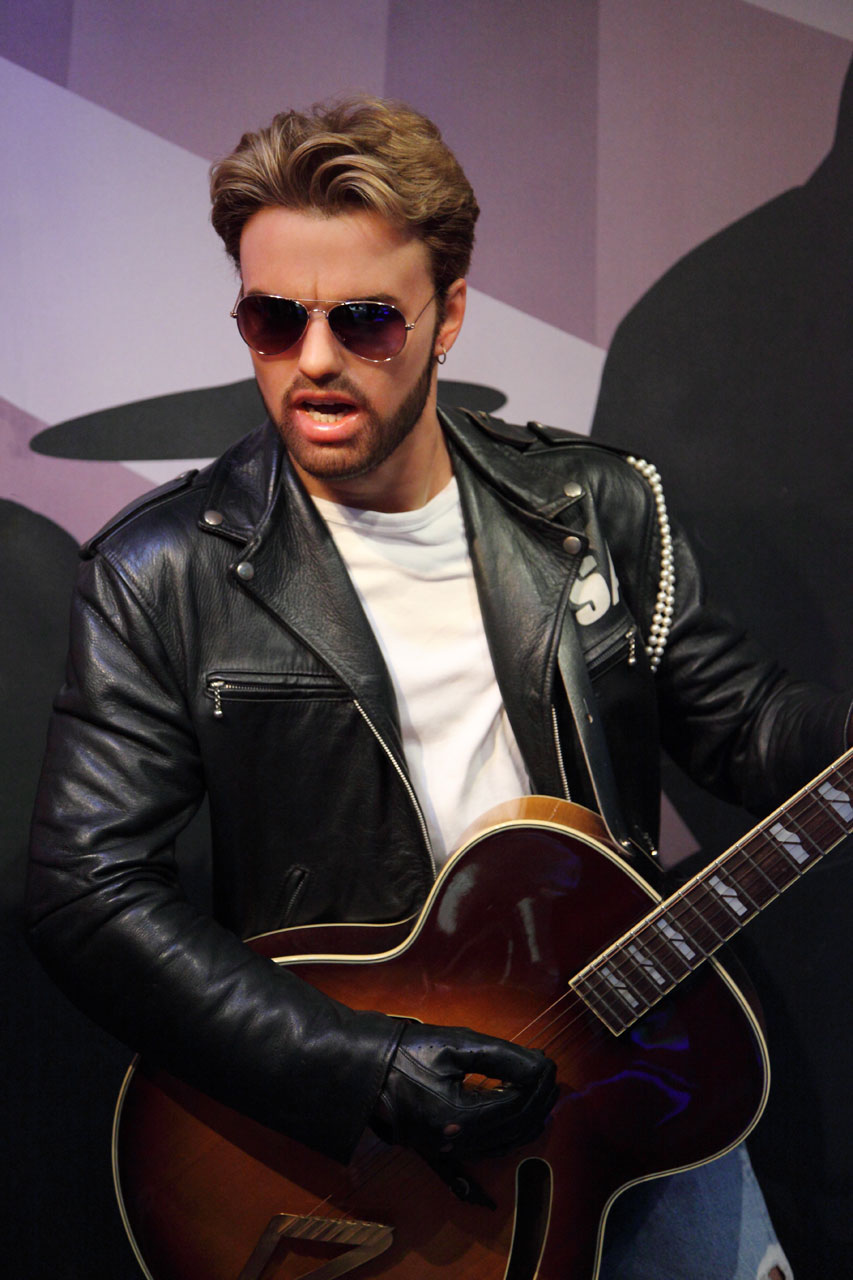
George michael wax figure with guitar in museum.